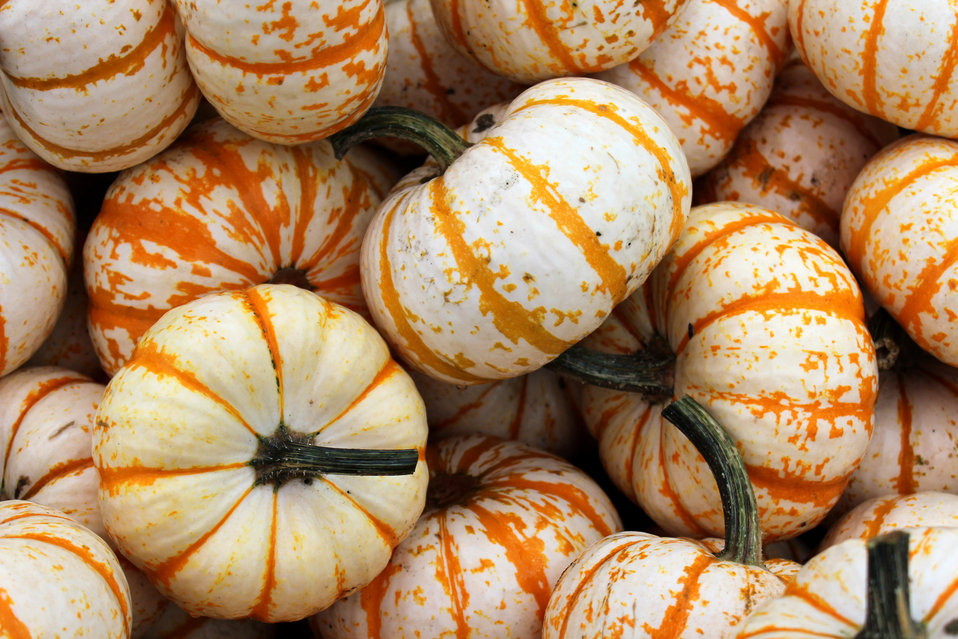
Background pumpkins 2

A group of white and orange pumpkins for use as a background.